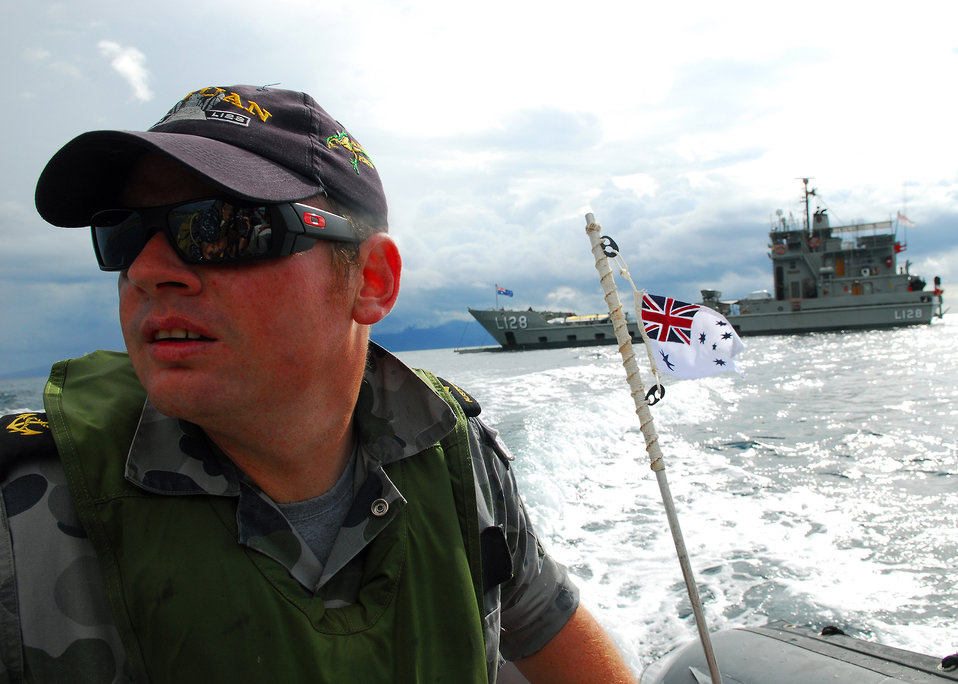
Australian Royal Navy Leading Seaman Nathan Byast drives a Rigid Hull Inflatable Boat, with passengers from The Military Sealift Command hospital ship USNS Mercy (T-AH 19), who have just toured Her Majesty Australian Ship (HMAS) Labuan (L128) on July 20, 2010, in Sofifi, Indonesia. Mercy is in the North Maluku Islands conducting Pacific Partnership 2010, the fifth in a series of annual U.S. Pacific Fleet endeavors conducted in Indonesia as a disaster relief exercise aimed at strengthening regional partnerships.